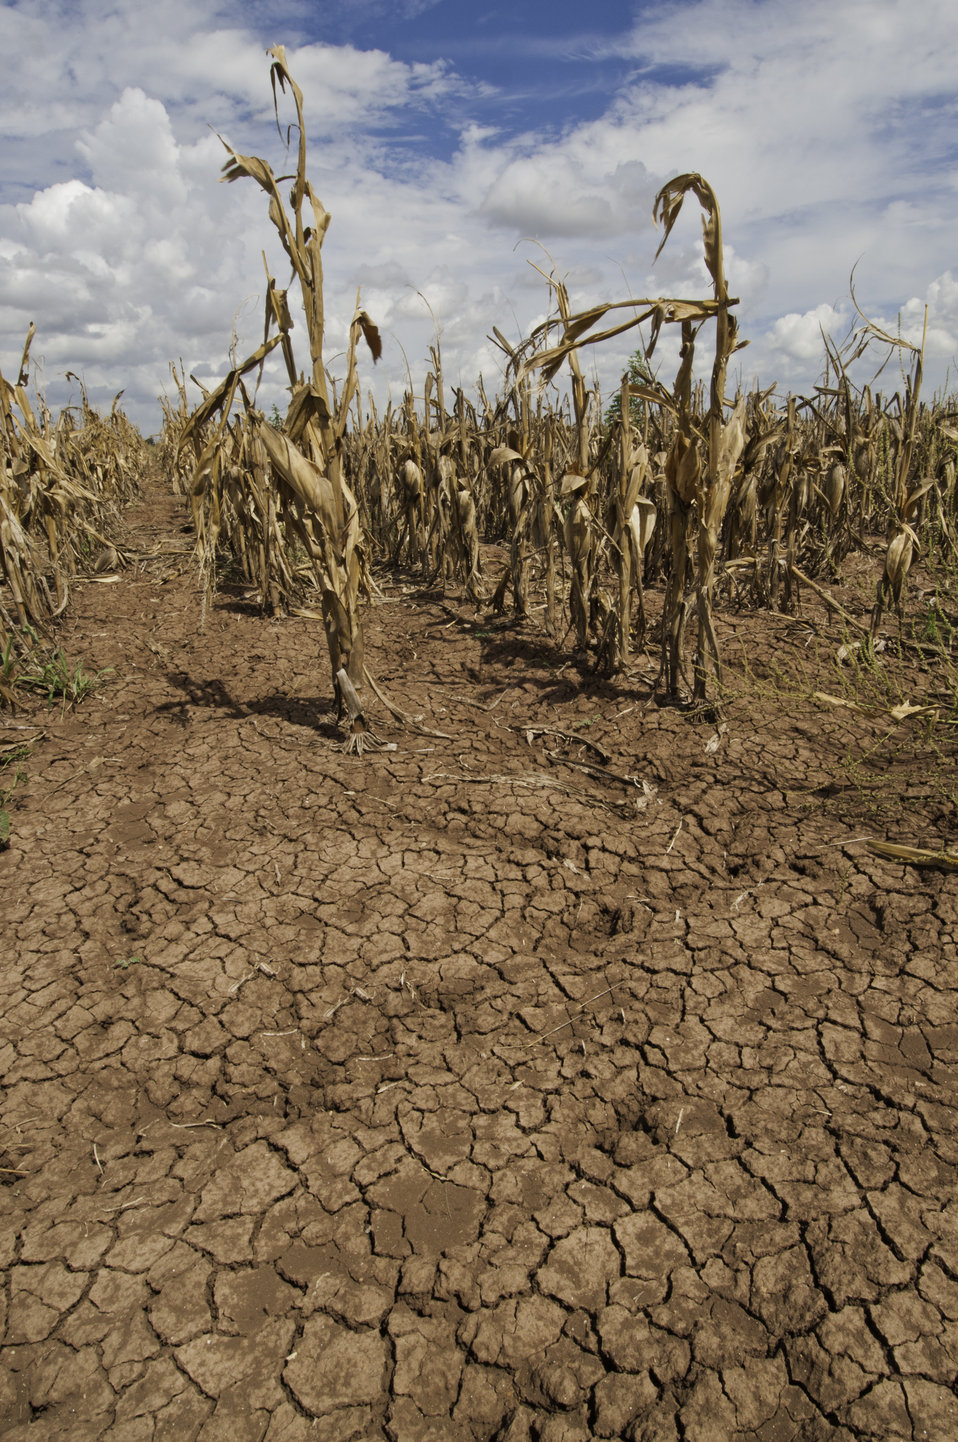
Corn shows the effect of the drought in Texas on Aug. 23, 2013.